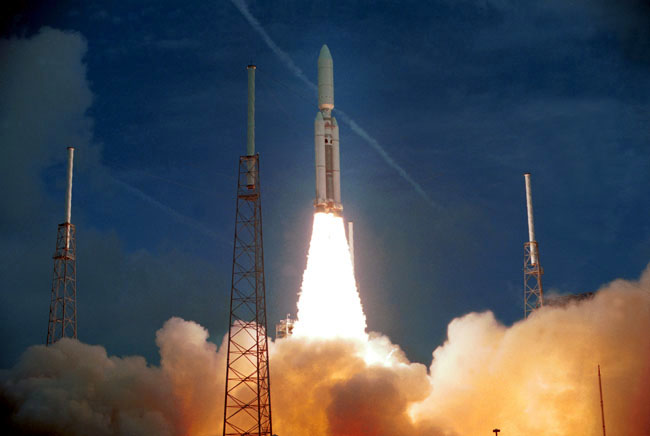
Titan IV

CAPE CANAVERAL AIR FORCE STATION, Fla. -- A Titan IV blasts off from here April 8. The rocket carried a military communications satellite.